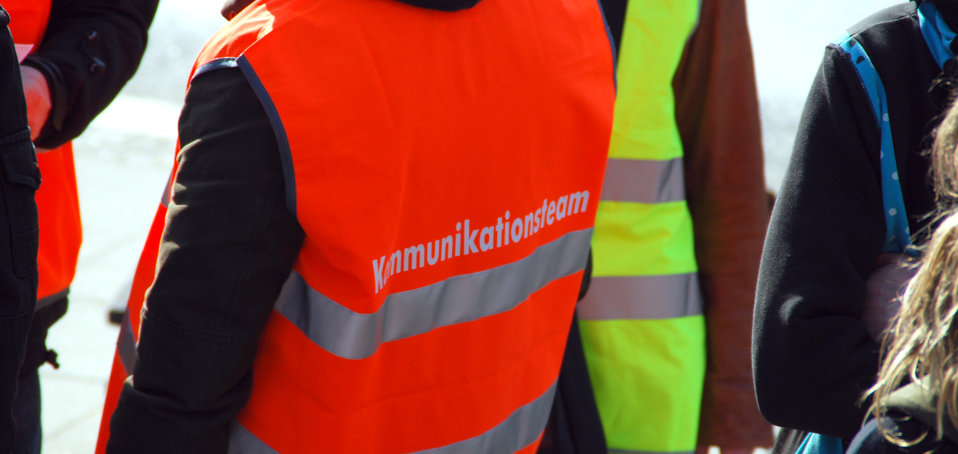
Proteste gegen den Nazi-Aufmarsch am 24.3.2012 in Frankfurt (Oder)